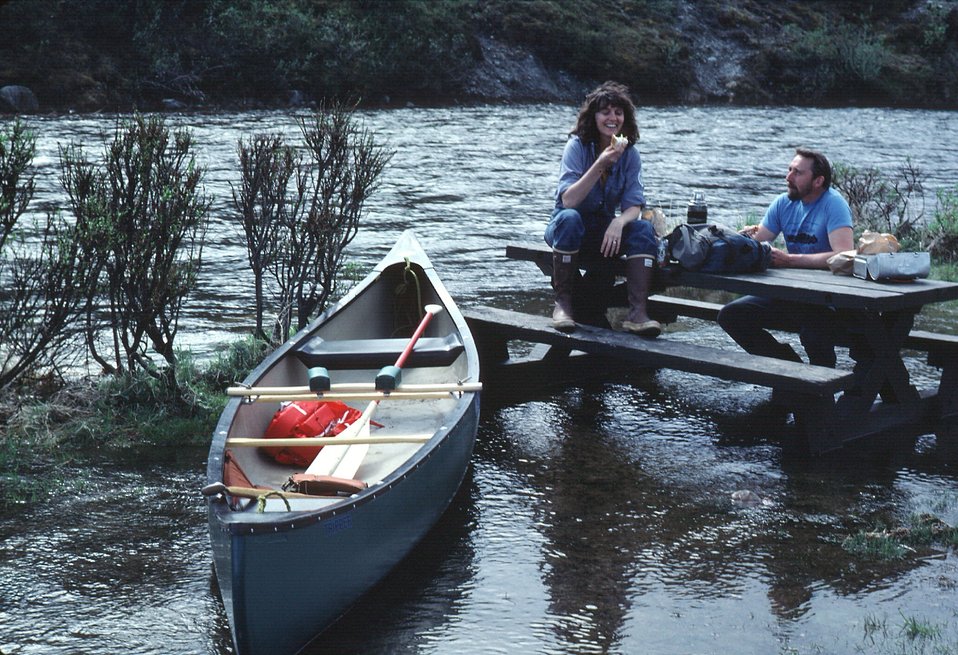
Canoeists camping at picnic table, Delta River Wayside, Alaska